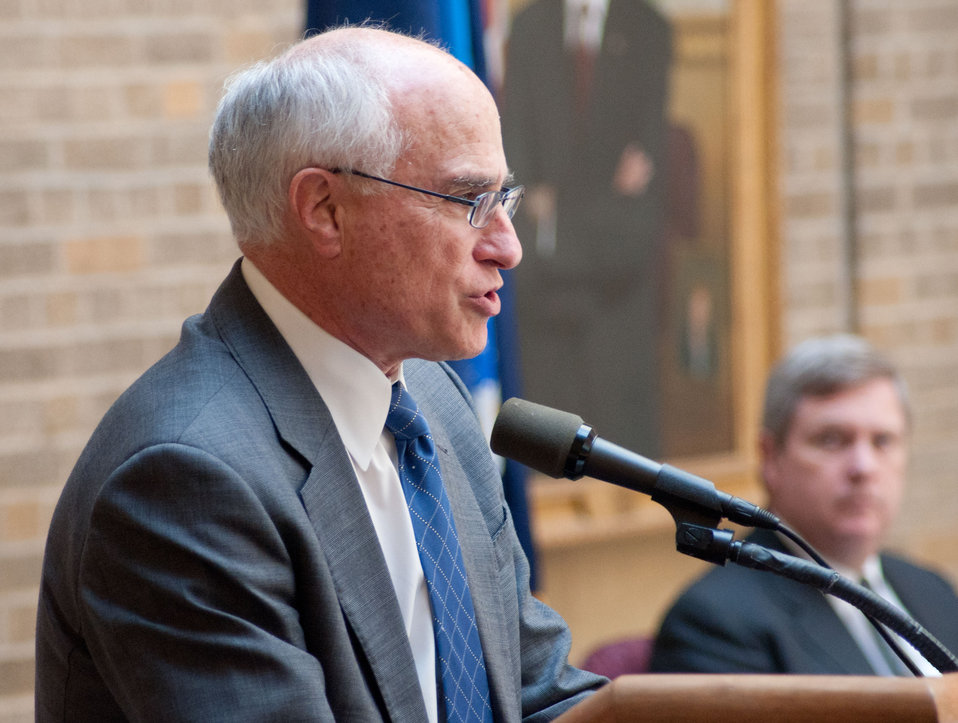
U.S. Department of Agriculture Undersecretary for Natural Resources and Environment Harris Sherman introduced Secretary Tom Vilsack to the audience at the International Year of Forests (IYOF) celebration on Friday, June 3, 2011 on the Patio of the Whitten Building, U.S.Department of Agriculture in Washington, DC.